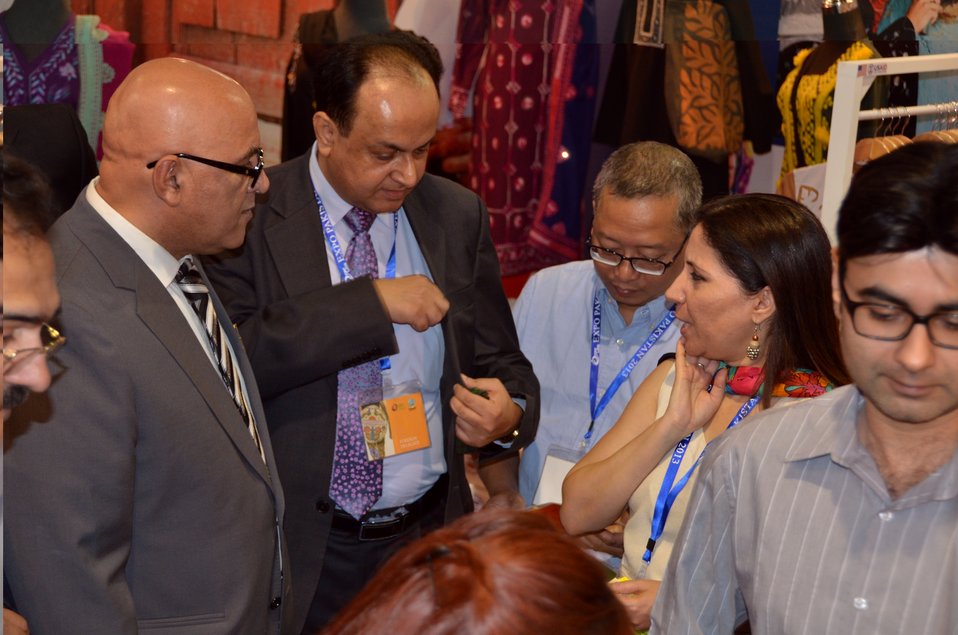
USAID Firms Project at Expo Pakistan 2013

USAID Firms Project Stall visited by Foreign Delegates